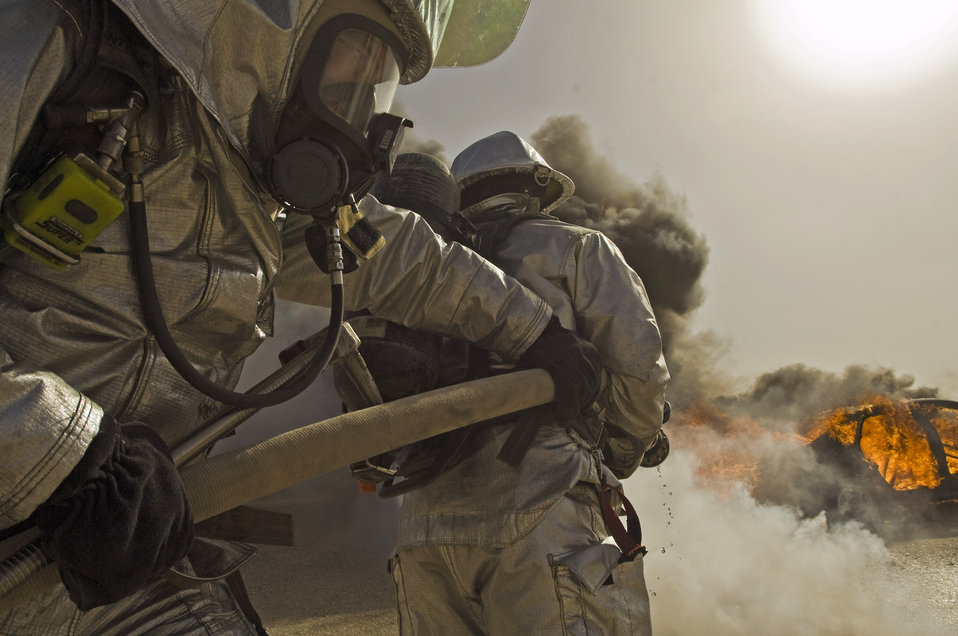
Testing under fire

Senior Airman Bradley Richgels helps position a fire hose in response to a vehicle fire Dec. 17 at Ali Base, Iraq. Airman Richgels and other firefighters with the 407th Expeditionary Civil Engineer Squadron held a training exercise to test how Airmen response to a connex and vehicle fire. He is deployed from the Minnesota Air National Guard's 133rd Airlift Wing.